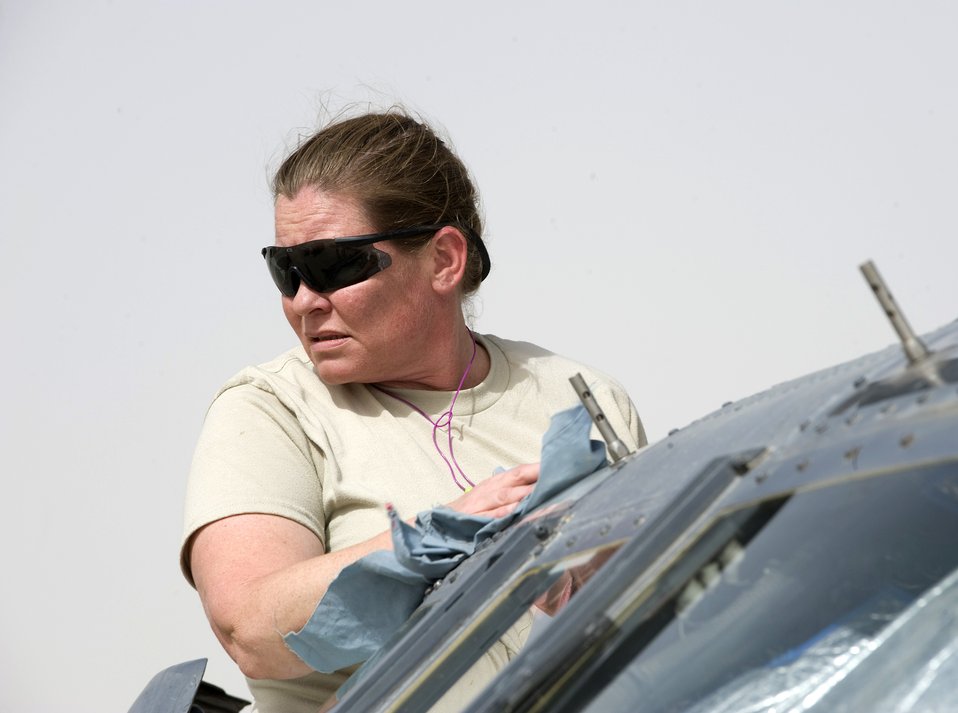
Airmen enhance Army medical evacuation mission

Tech. Sgt. Joyce Lee cleans windows on an HH-60 Pave Hawk Aug. 15 at Kandahar Air Base, Afghanistan. The HH-60 and crews who fly and maintain it are assigned to the 305th Expeditionary Rescue Squadron deployed from Davis-Monthan Air Force Base, Ariz.